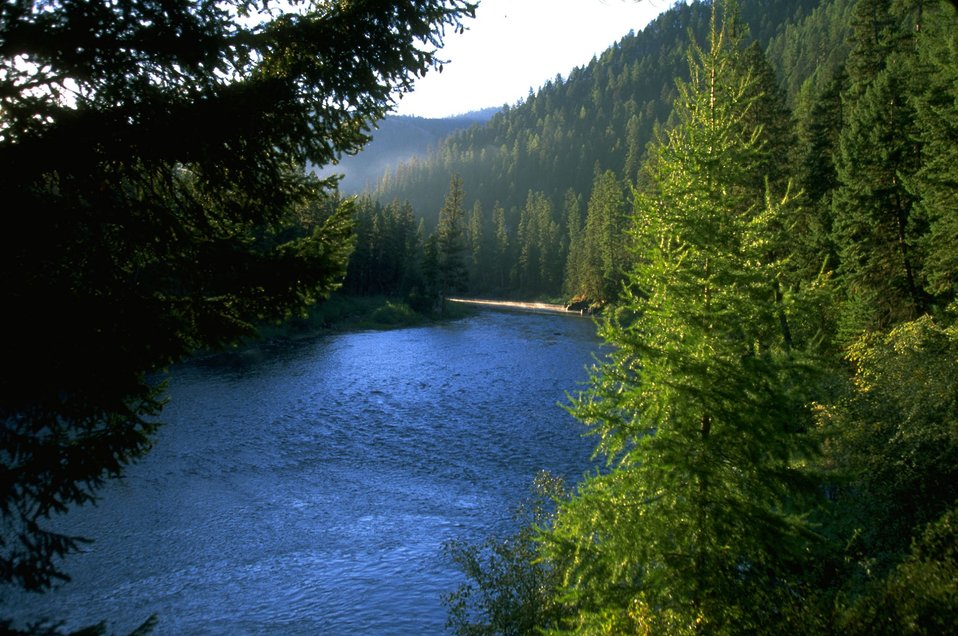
Morning on the Blackfoot River